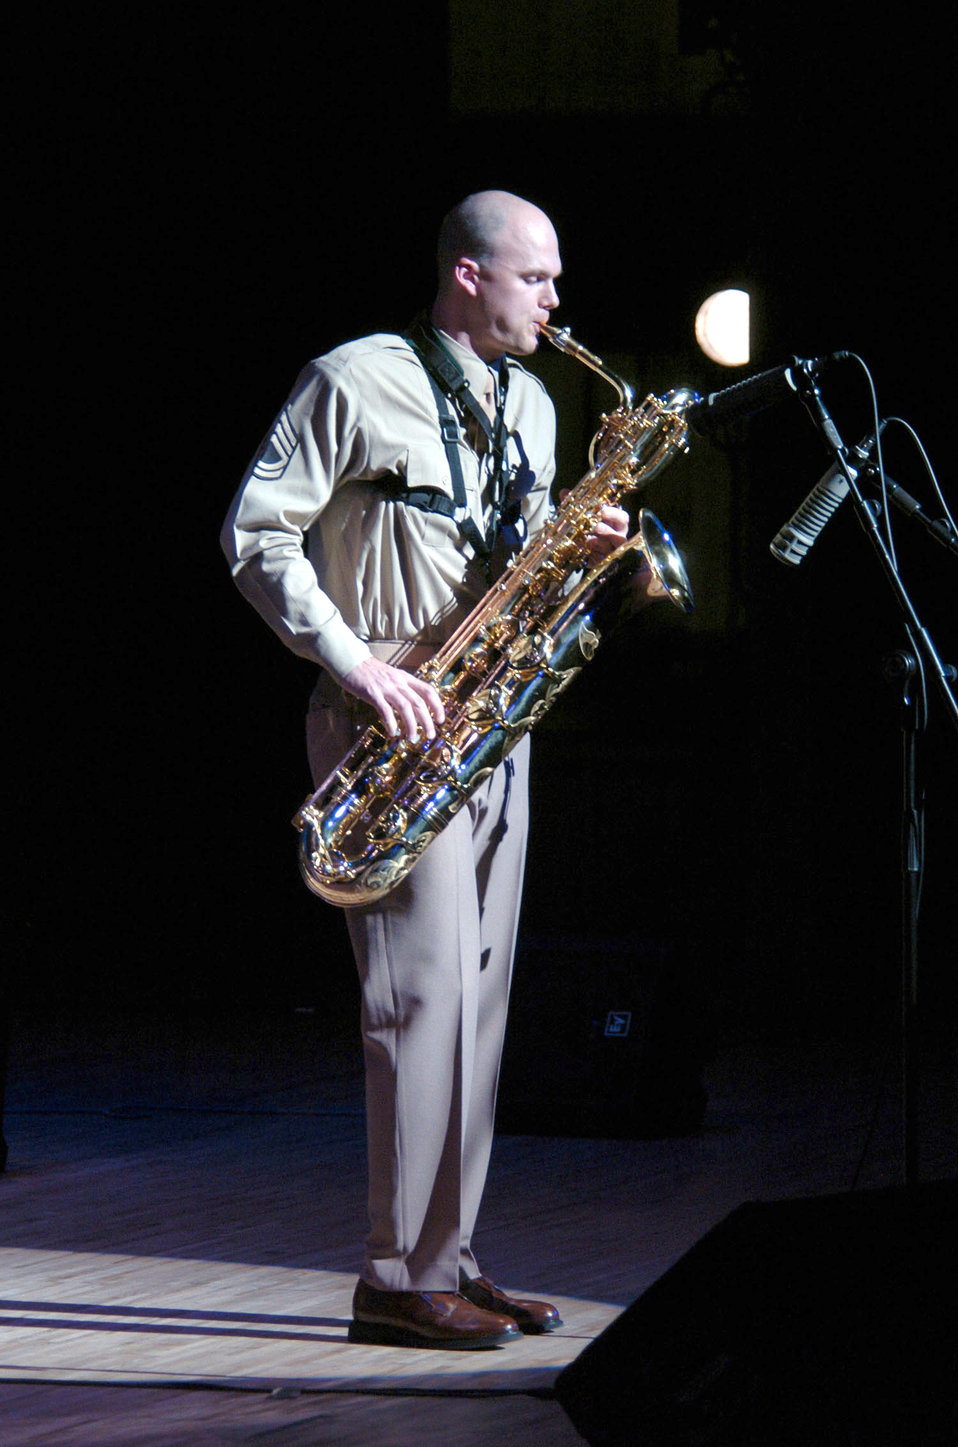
Band play in Hiroshima

HIROSHIMA, Japan -- Staff Sgt. Jeff Saunders entertains a crowd during a concert here. Hansen is a saxophone player from the U.S. Air Force Band of the Pacific-Asia based at Yokota Air Base, Japan. He wore a traditional U.S. Army Air Corps uniform as part of the band's trademark Glenn Miller show.